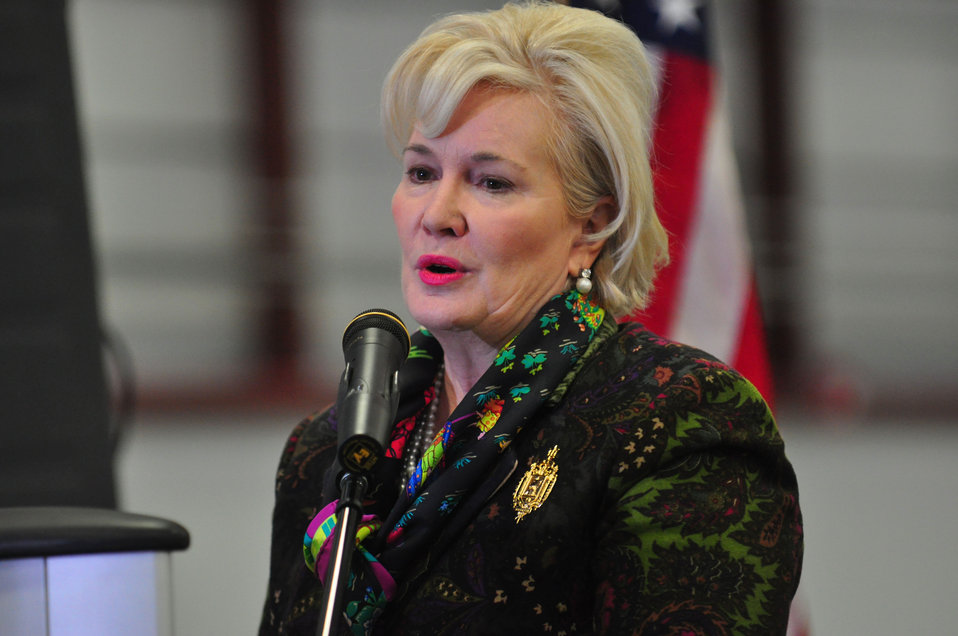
Carbon Fiber Technology Facilty Open House Oak Ridge Tennessee

13-025 DOE photo Lynn Freeny
Council on Competitiveness CEO Deborah Wince-Smith